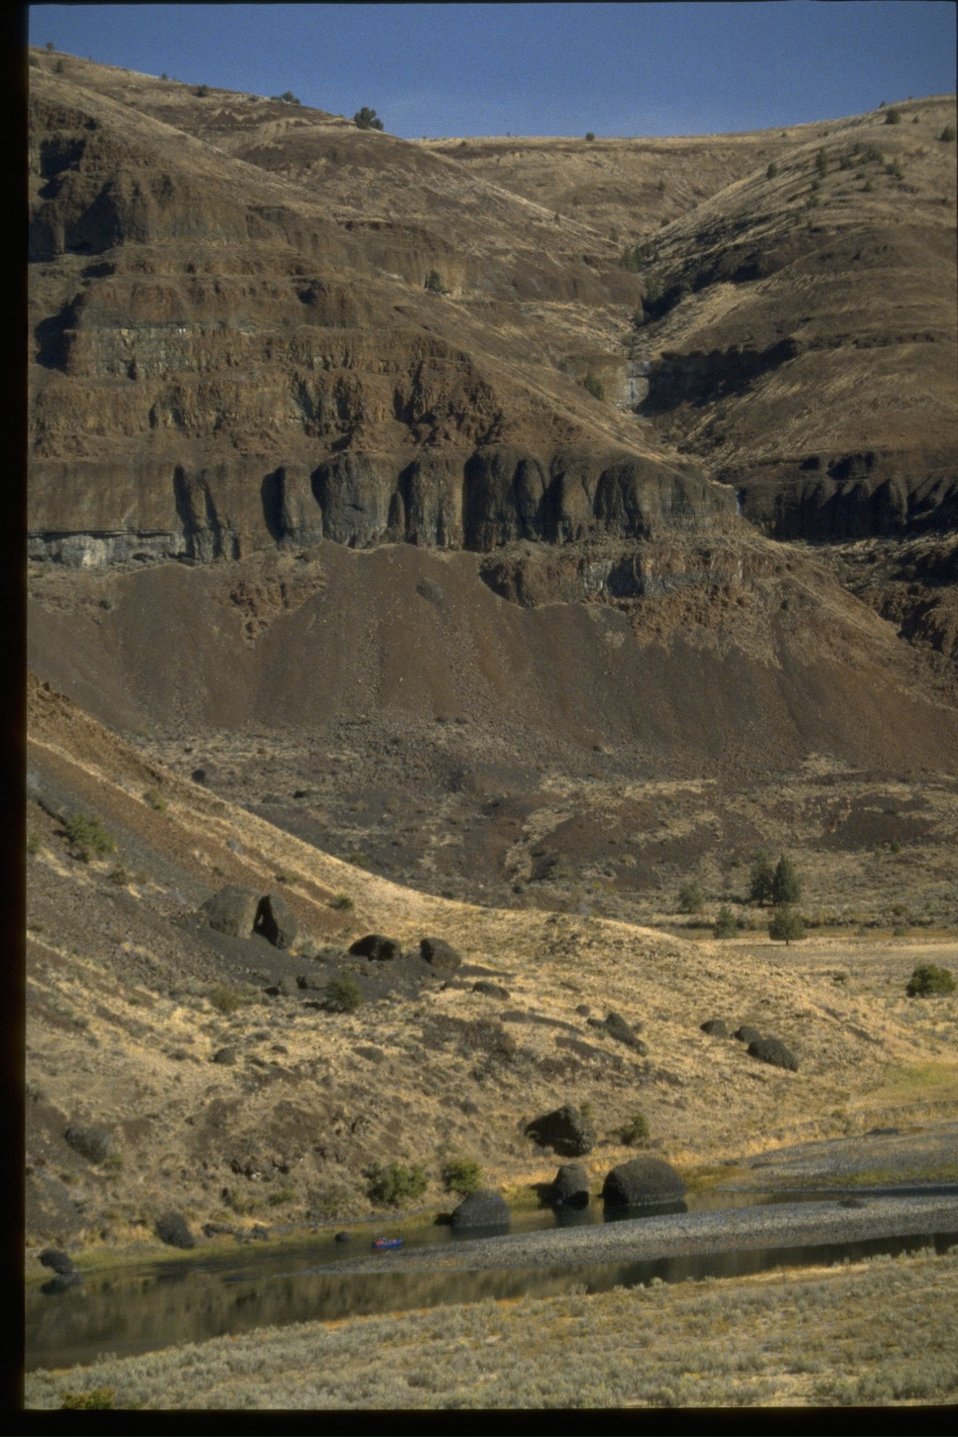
Photo in a seven series collection of a rafter on the John Day River. Basalt cliffs are in the background.